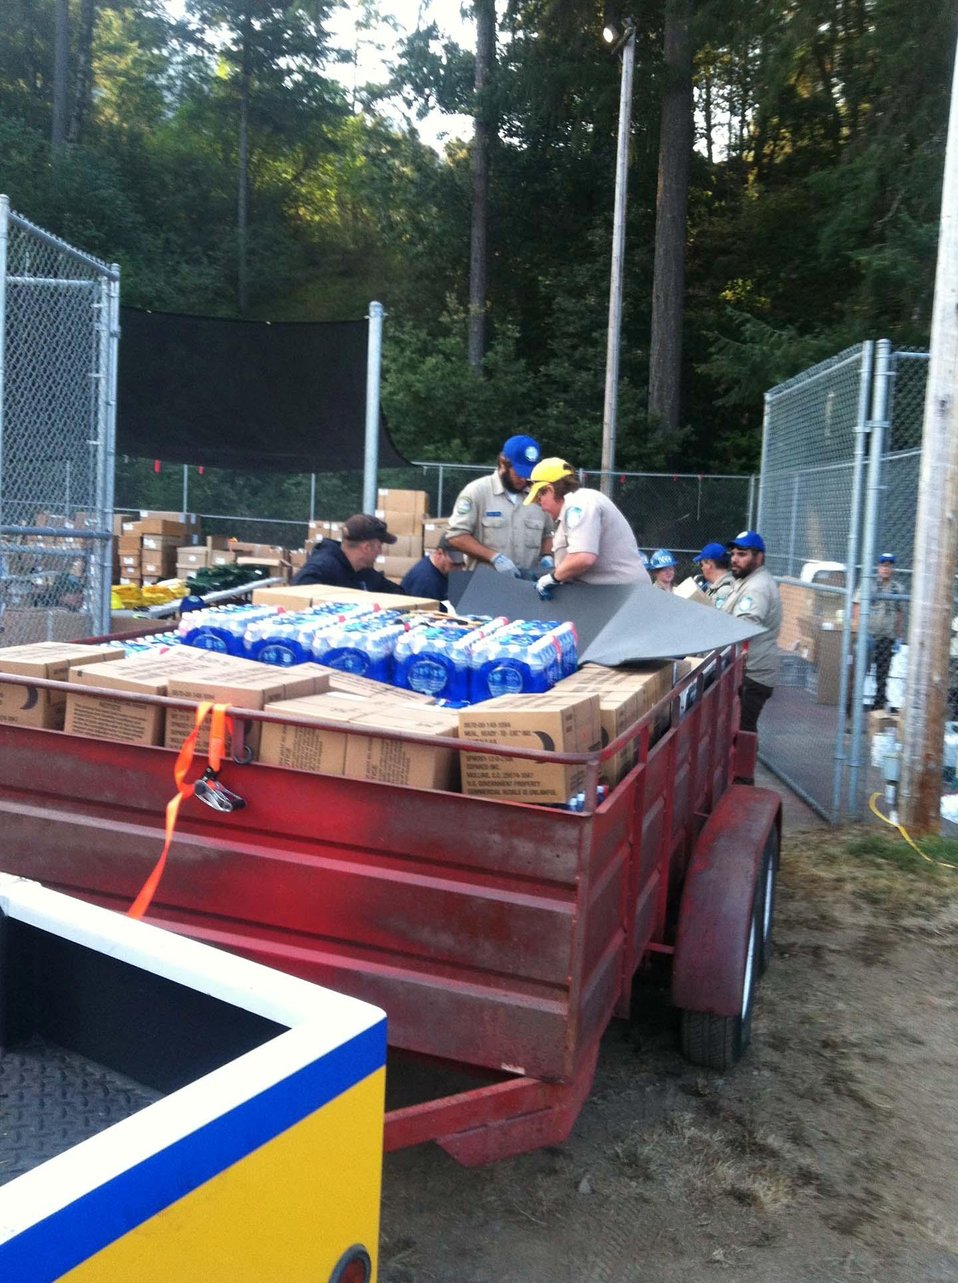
Supplies for remote spike camp are loaded for transport for the Corral Complex Fire. The Corral Complex Fire in the Six Rivers National Forest near the Trinity Alps Wilderness area in California began on Aug. 10, 2013 by lightning and has consumed approximately 4, 450 acres.